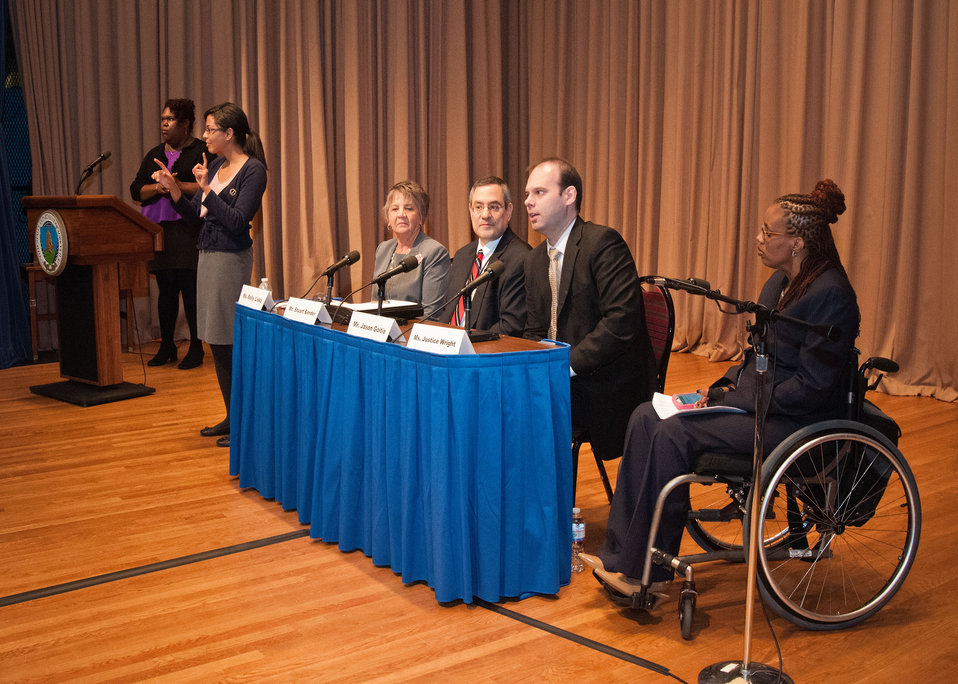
(L to R) U.S. Department of Agriculture (USDA) Office of the Executive Secretariat employee Sally Liska, USDA Office of Ethics employee Stuart Bender, USDA Office of Ethics employee Jason Goitia, and USDA Office of Communications employee Justice Wright sit on the panel ‘Hiring and Employing Individuals with Disabilities at the USDA 2012 National Disability Employment Awareness Month celebration in the Jefferson Auditorium at USDA in Washington, D.C. on Wednesday, Oct. 17, 2012. The theme for the event was, “A Strong Workforce is an Inclusive Workforce: What Can You Do?